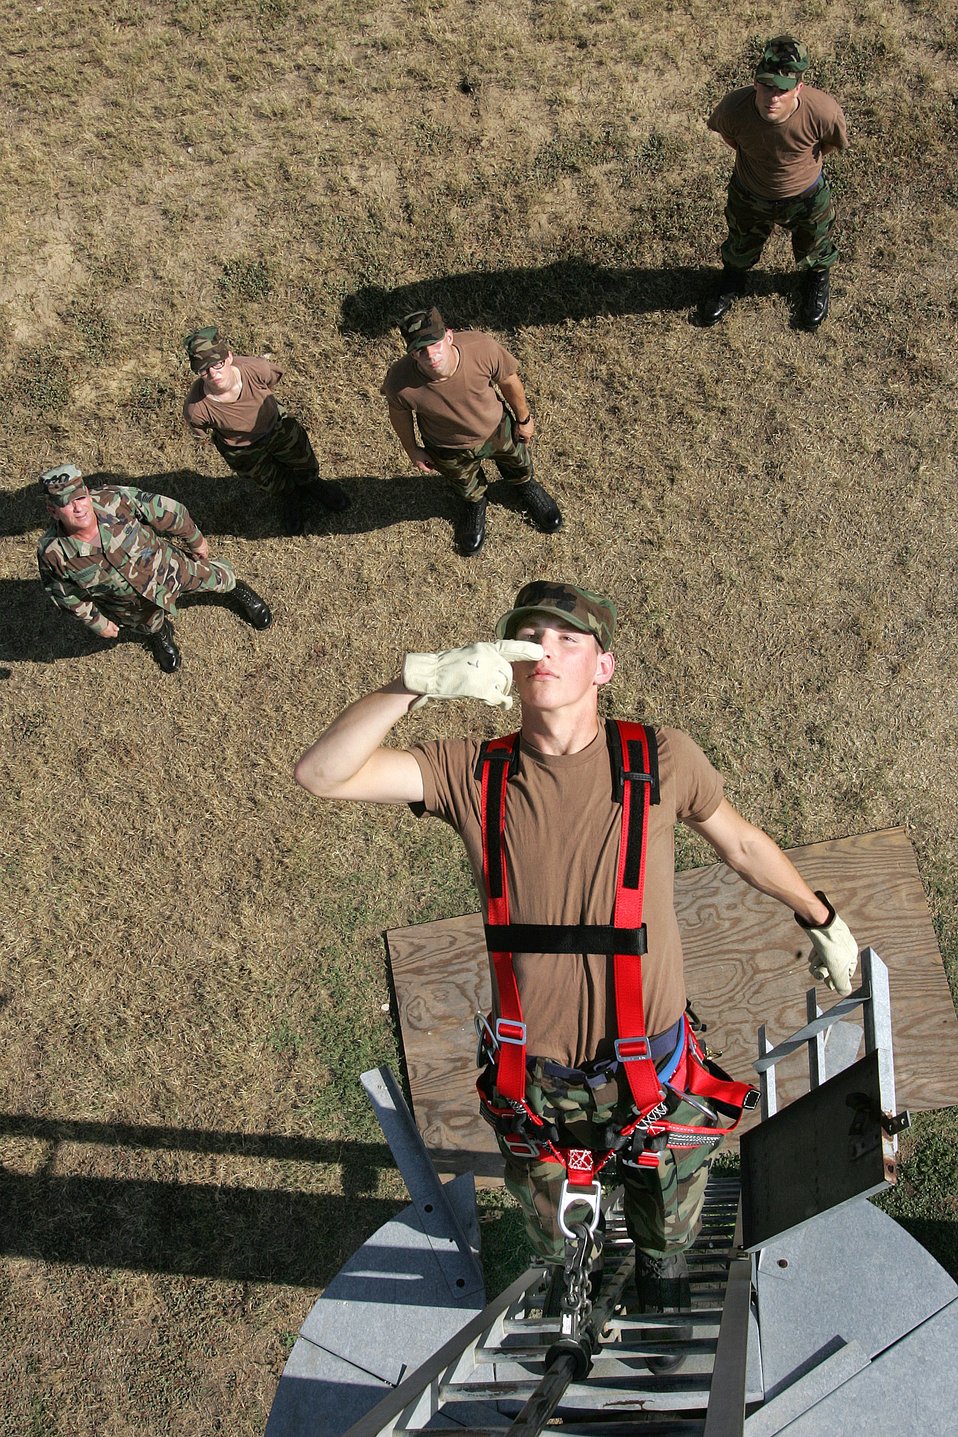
Acrophobia

During an evaluation for acrophobia, Airman Basic James Pelletier touches his nose as he performs a test of balance atop a ladder attached to a utility pole at Lackland Air Force Base, Texas, on Thursday, July 13. Airman Pelletier has been selected for the communications career field, one of six Air Force career fields requiring the evaluation on the fear of heights before continuing to technical school. Airman Pelletier, in his second week of basic training, is assigned to the 322nd Training Squadron.